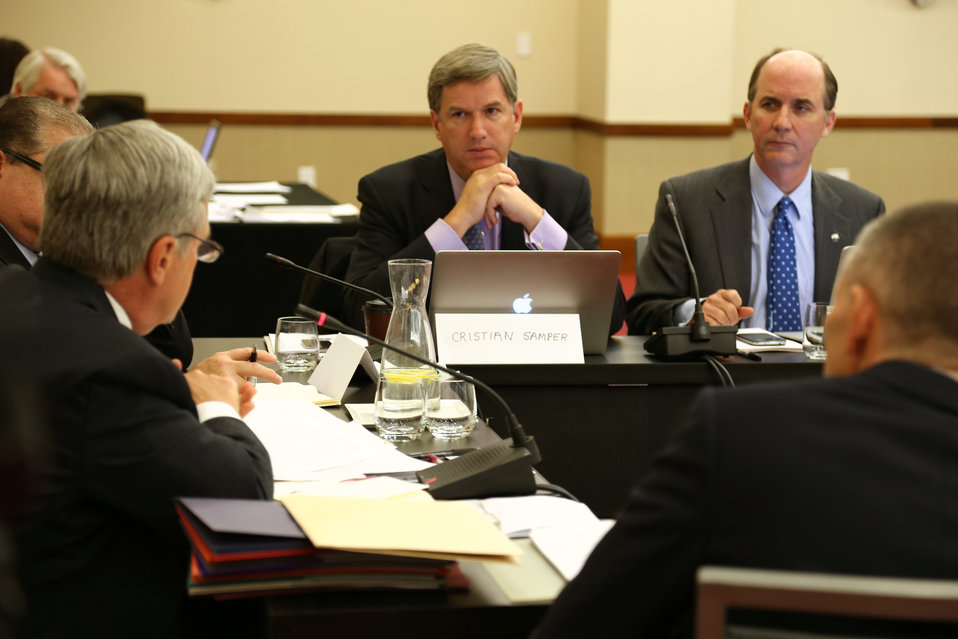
Wildlife Trafficking Advisory Council Meeting March 20, 2014